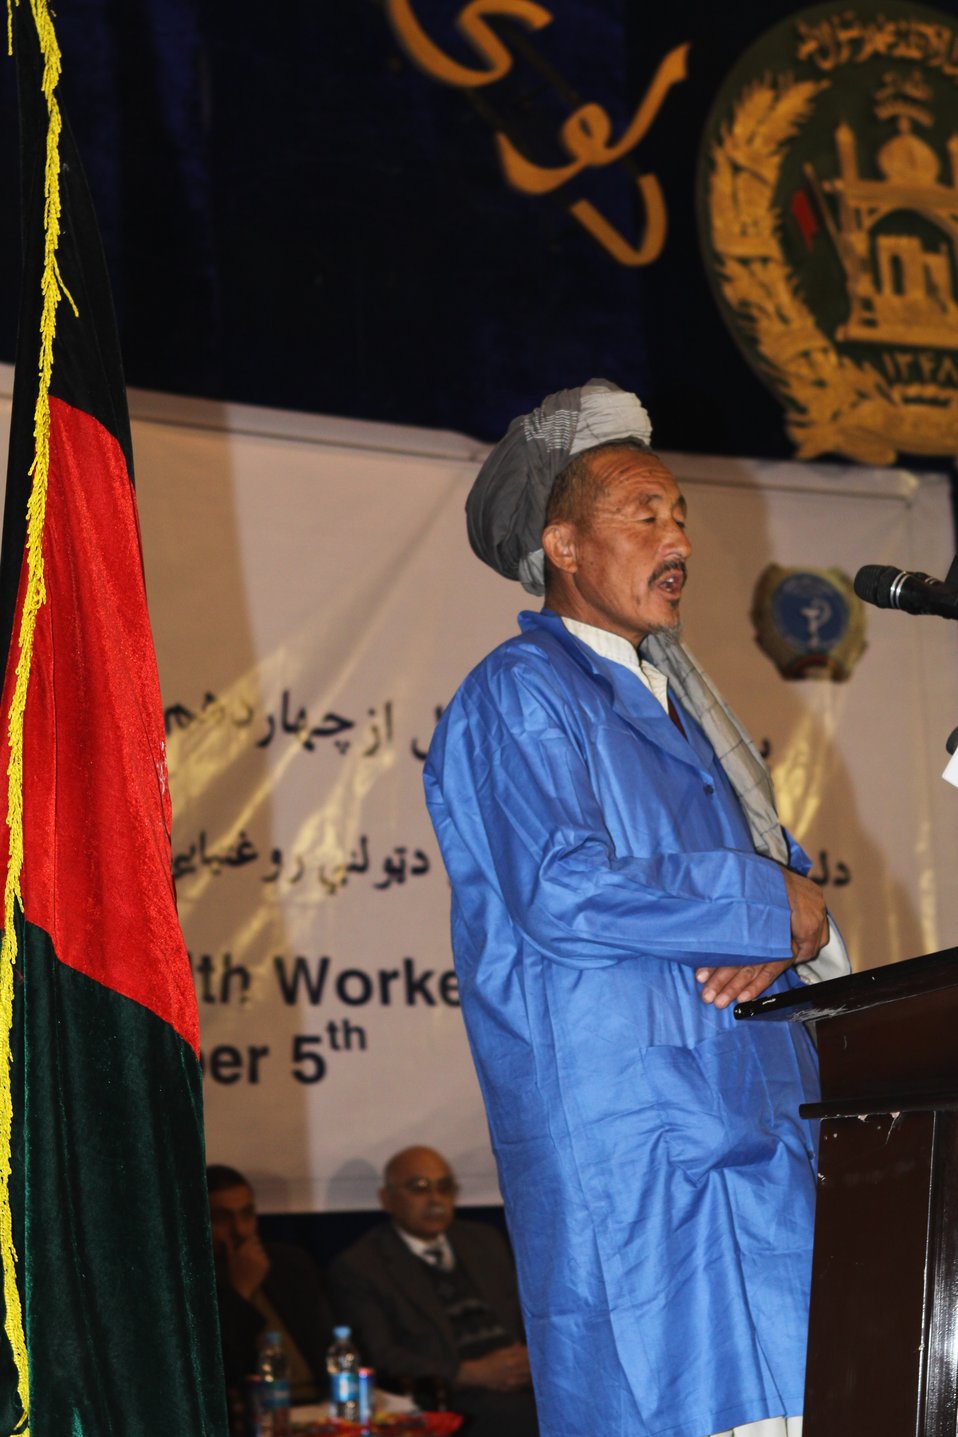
Community Health Workers Celebrated

Kabul, Afghanistan | December 5, 2010 — In support of the United Nations designated International Volunteer Day for Economic and Social Development, Afghanistan’s Ministry of Public Health celebrated its annual Community Health Worker Day today. Acting Minister of Public Health Dr. Suraya Dalil, USAID Senior Deputy Mission Director Robert Hellyer, other government officials, and international donors joined in recognizing the critical contribution of community health workers in Afghanistan and encouraging them to continue their voluntary support to their communities.
The event praised the contributions of the more than 22,000 volunteers throughout the country who deliver community level health-education, counseling, and services out of village health posts located in private homes. The Ministry of Public Health envisioned that community-based healthcare programs will actively encourage communities and families to adopt healthy lifestyles and behaviors, and provide families access to high quality and socially acceptable preventative medicine and life-saving services.
“We have 22,000 community health workers in Afghanistan that are able to implement the basic and standard medicines. They all have been trained through a job description,” said Minister Dalil. Addressing the health workers, she added, “I am proud and feel powerful that I have people like you.”
USAID-funded health projects collaborate closely with the Ministry of Public Health to improve the health and nutritional status of Afghans, provide quality primary healthcare, and promote healthy behaviors at the community and household-levels. USAID supported the training of more than 9,000 of the volunteer community health workers currently working in Afghanistan.
“On behalf of the American people, I congratulate the Community Health Workers for their diligence to gain the skills and knowledge necessary to serve their communities in this important role,” said USAID Senior Deputy Mission Director Hellyer. “USAID strongly supports community based health care and believes that quality community-based health services are essential to reaching Afghanistan’s Millennium Development Goals.”
To support the Basic Package of Health Services, USAID assisted in developing the community health worker training manual, helped train community health worker supervisors and master-trainers, facilitated in-service training, and produced and developed reporting tools, job aids, and education materials.